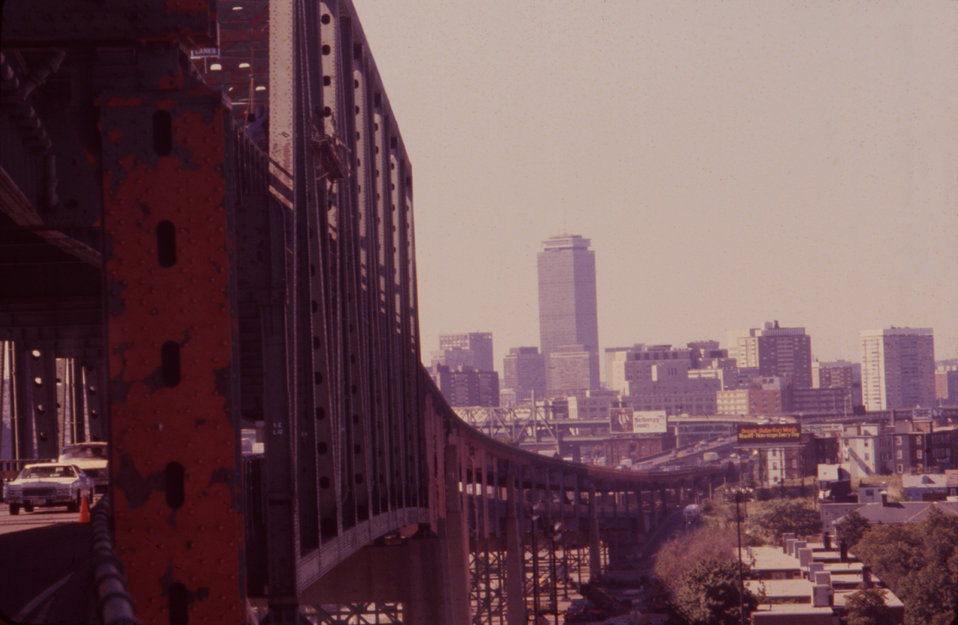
The Tobin Bridge in Boston, MA, shed flakes of lead-based paint onto subjacent neighborhoods and the Mystic River below.